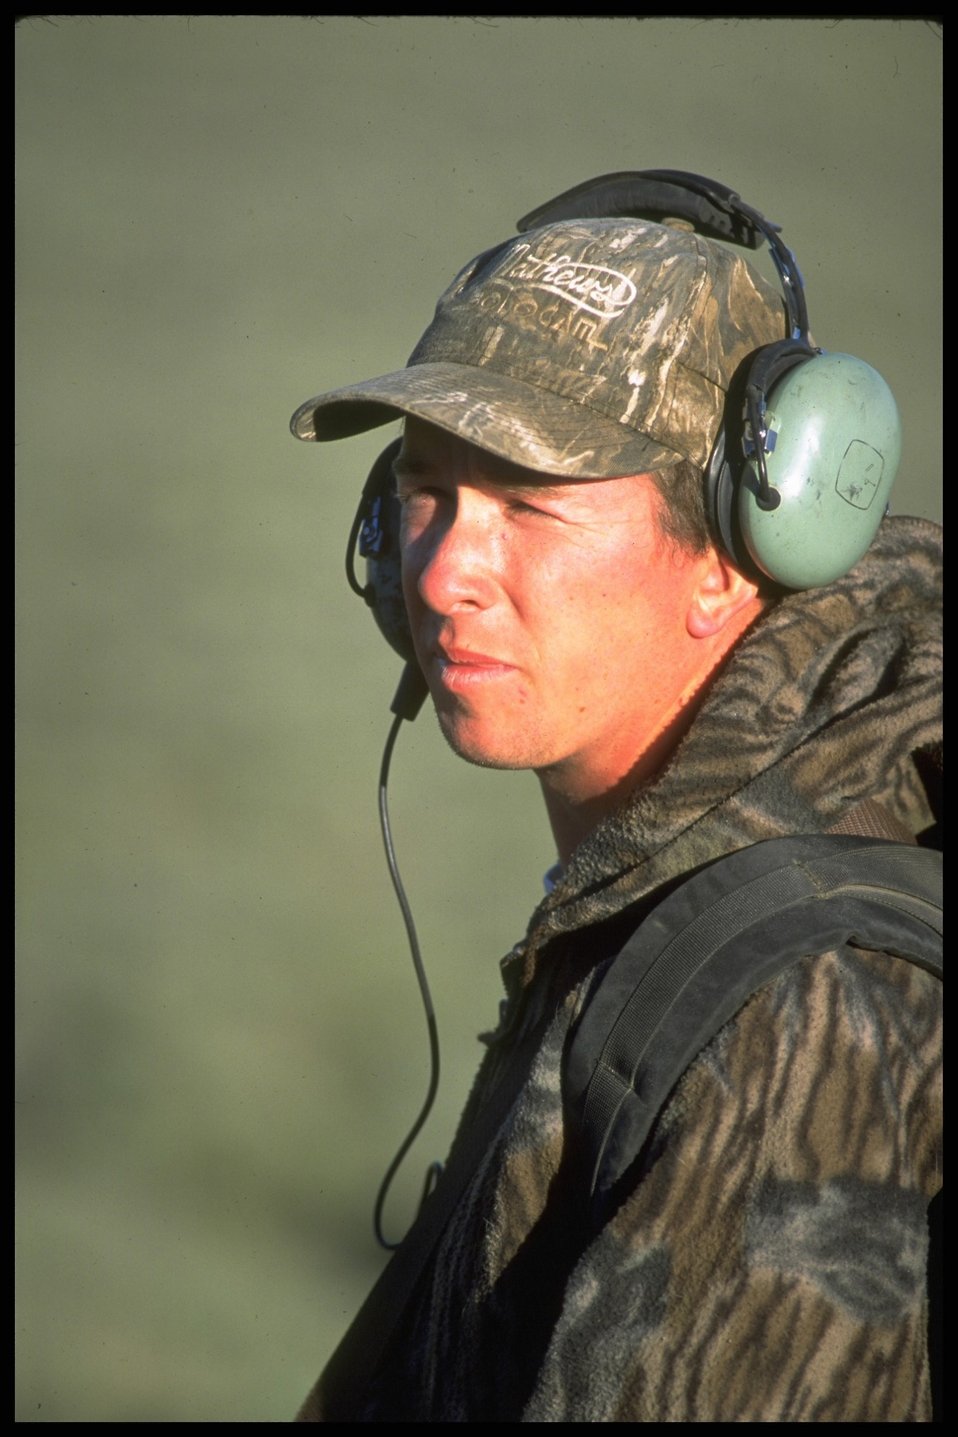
Member of Sage Hen Crew, Lakeview District.